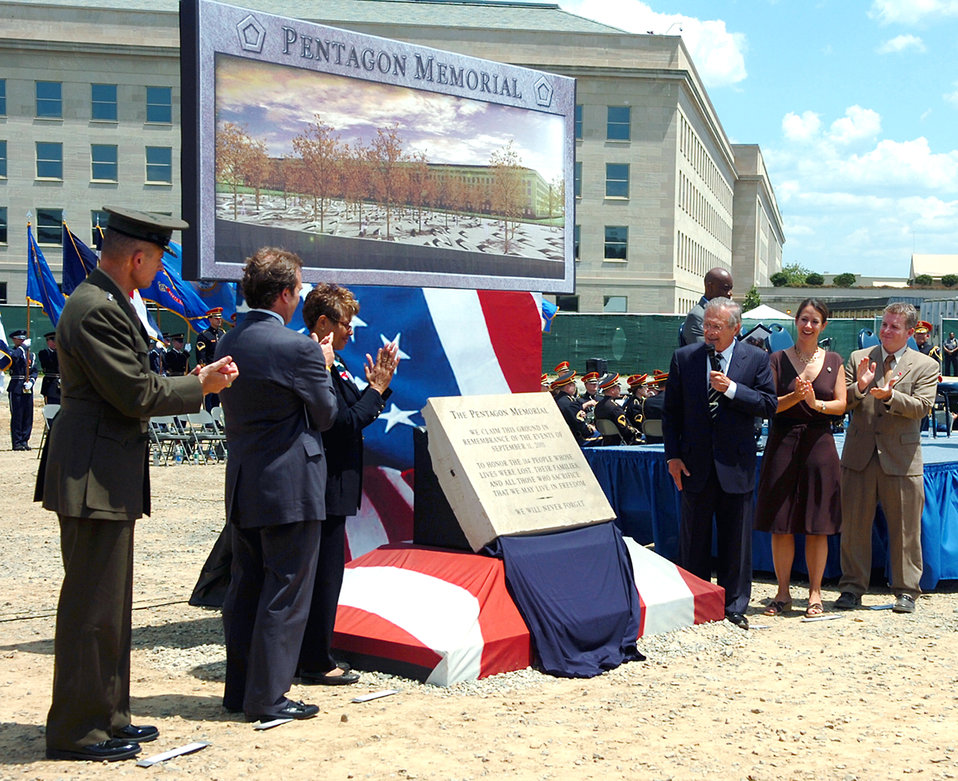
Site dedicated to Pentagon's Sept. 11 victims

The memorial stone is unveiled Thursday, June 15, at the ceremony marking the start of construction on the Pentagon Memorial, located at the site where 184 lives were lost when American Airlines Flight 77 crashed on Sept. 11, 2001. From left are: U.S. Marine Corps Gen. Peter Pace, chairman of the Joint Chiefs of Staff; Jim Laychak, president of the Pentagon Memorial Fund; Rosemary Dillard, vice president of the Pentagon Memorial Fund; Secretary of Defense Donald H. Rumsfeld; and Julie Beckman and Keith Kaseman, Pentagon Memorial concept designers.